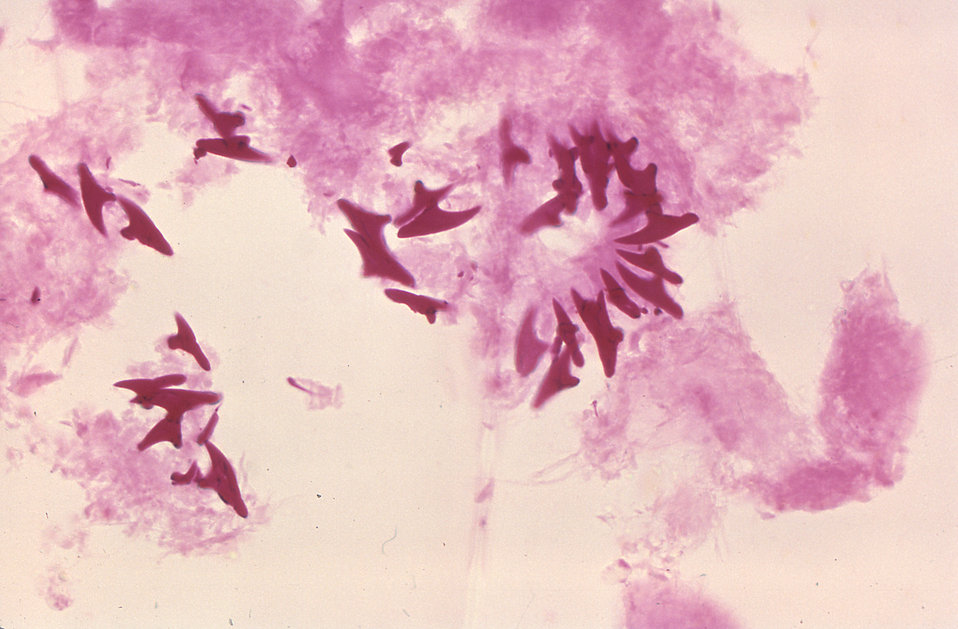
This is a photomicrograph of protoscolex hooks of Echinococcus vogeli taken from a cyst within a gorilla.